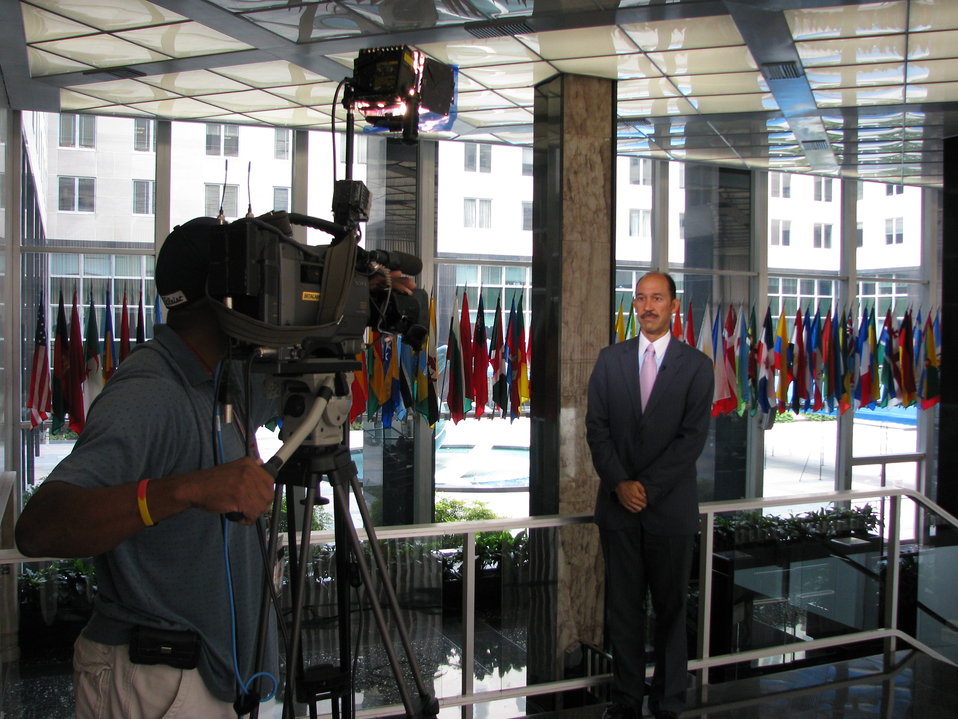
Deputy Assistant Secretary Corbin Participates in Interview with Al-Jazeera

Deputy Assistant Secretary of State for Iraq Michael Corbin speaks to Al-Jazeera about the Iraq transition and U.S. combat troop withdrawal, Washington, DC, August 25, 2010.